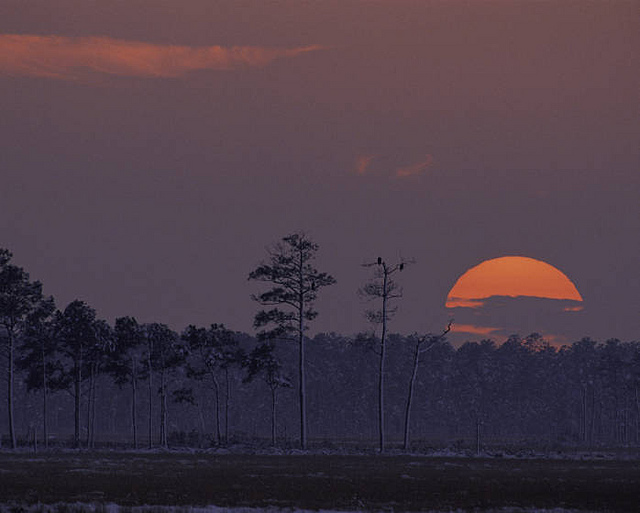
Blackwater National Wildlife Refuge, MD